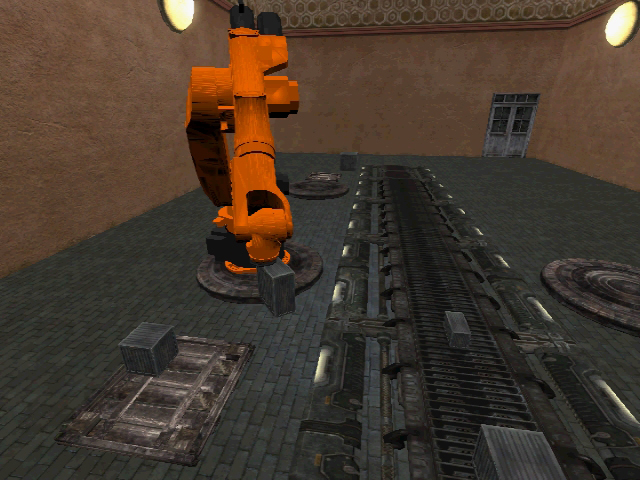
Manufacturing; Robot

Pallet-Packing Robot: This simulation shows a robot in the middle of creating a pallet of boxes of mixed sizes. NIST engineers are seeking university teams to develop such simulations for a May competition.